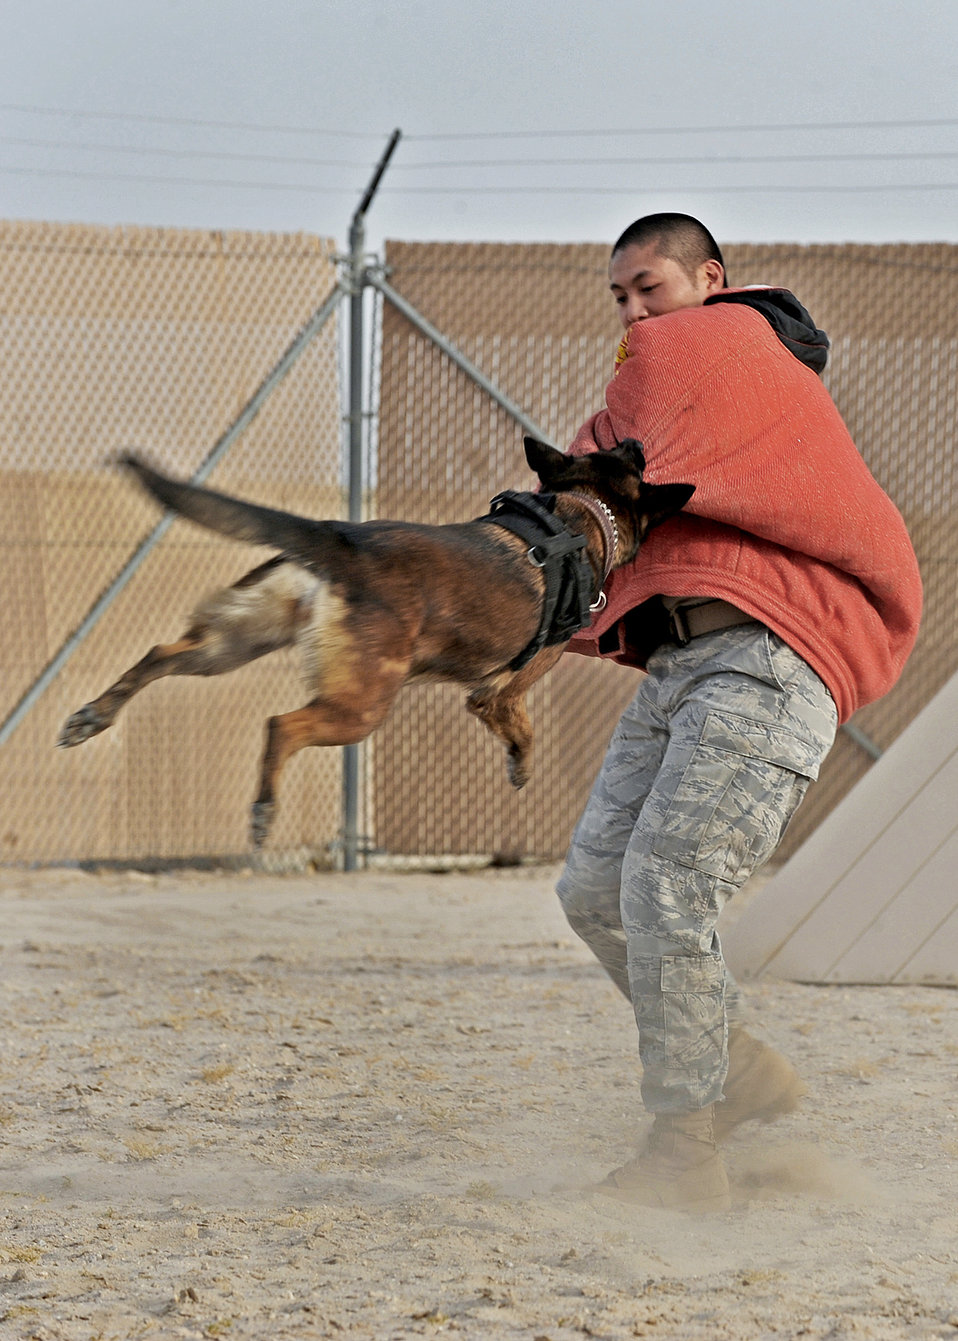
386 ESFS MWD

Staff Sgt. Lino Estacion demonstrates the training of a military working dog July 21, 2010, in Southwest Asia. Each dog is trained to attack and hold an aggressor until ordered to release by its trainer. Sergeant Estacion is a dog handler with the 386th Expeditionary Security Forces Squadron.